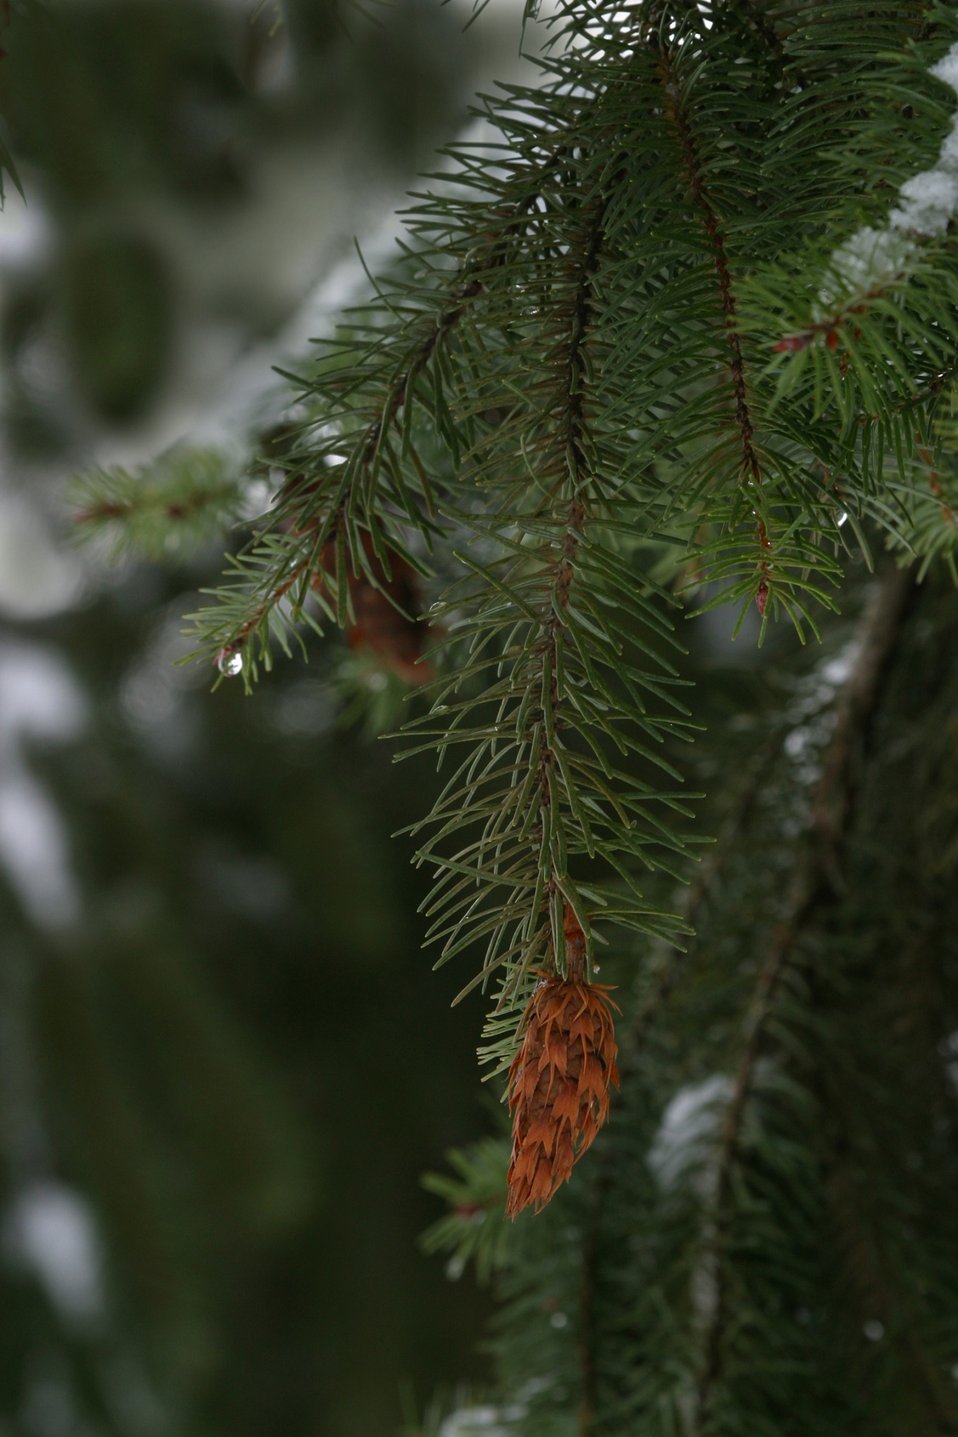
Snow and ice on Douglas Fir Bows and cones during the storm of January 2004.